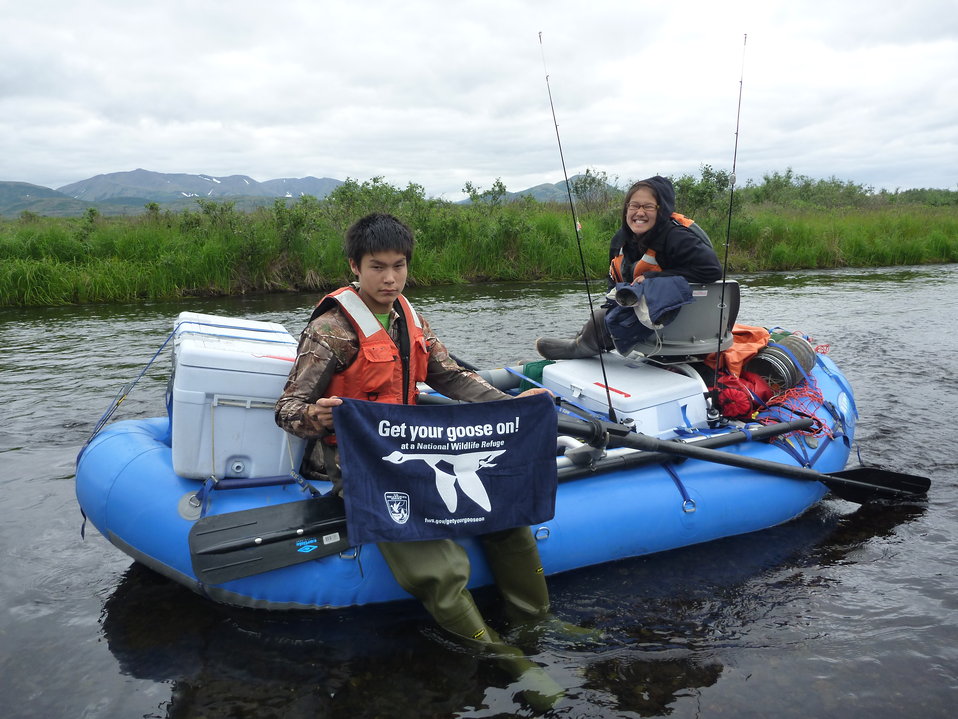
GYGO! - Alaska Style!

These youngsters Get Their Goose On! at Togiak National Wildlife Refuge in southwest Alaska.

The refuge supports 35 species of fish, 30 species of terrestrial mammals, 17 species of marine mammals, and 201 bird species.